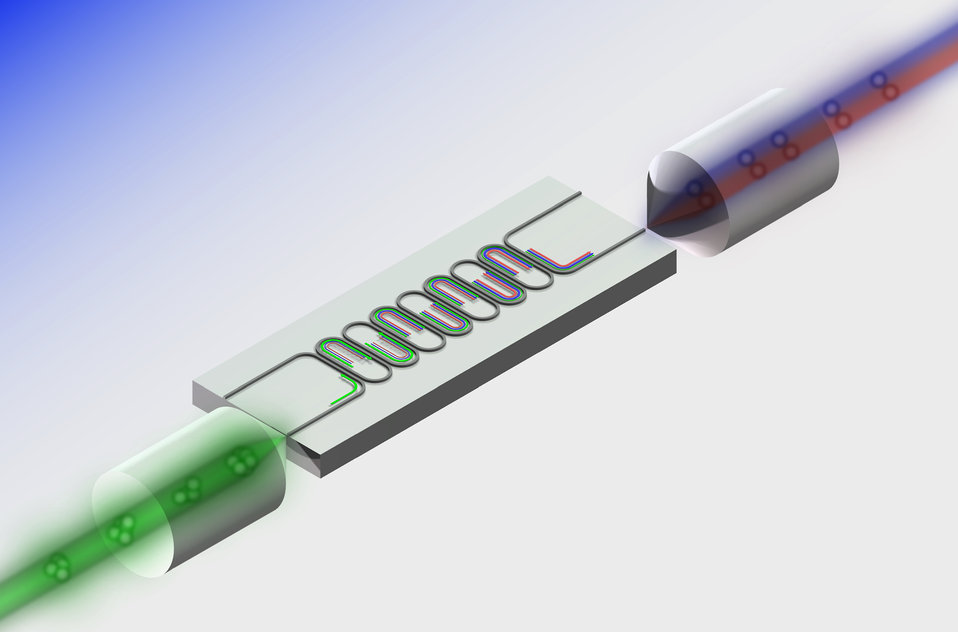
Photon Pair Generation

Illustration of the process of photon pair generation, in which input pump photons spontaneously generate special pairs of new photons that emerge at precisely the same time, with one at a slightly lower frequency and the other a slightly higher frequency, after which heralding occurs.